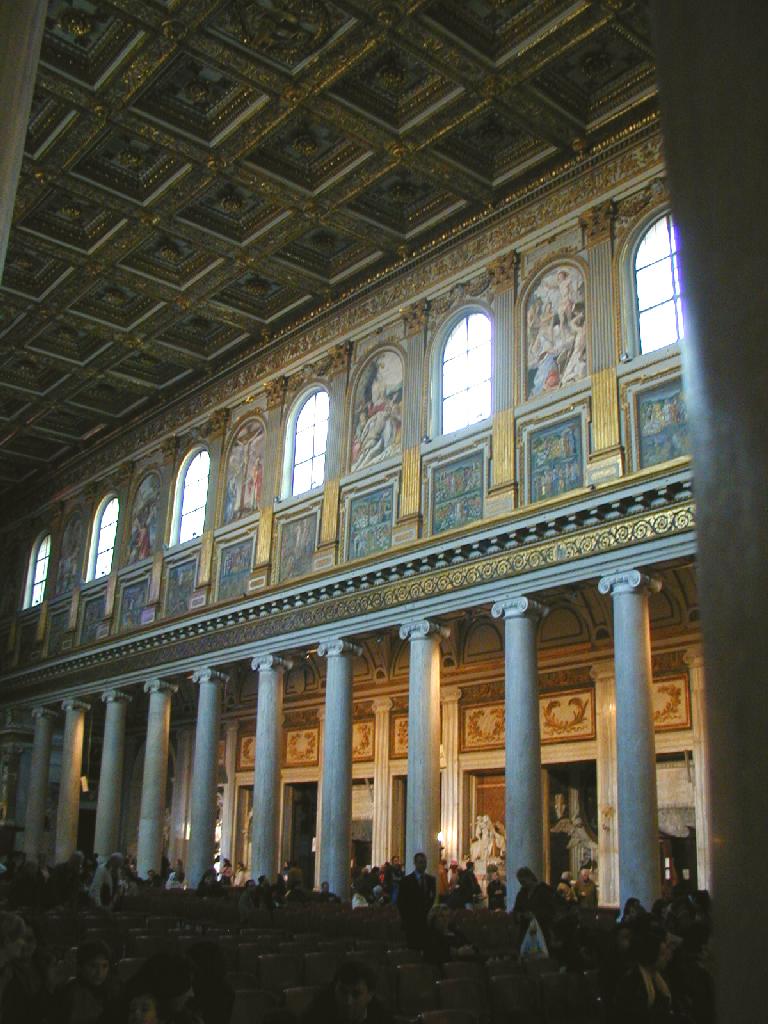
001126 1 smm navata 1